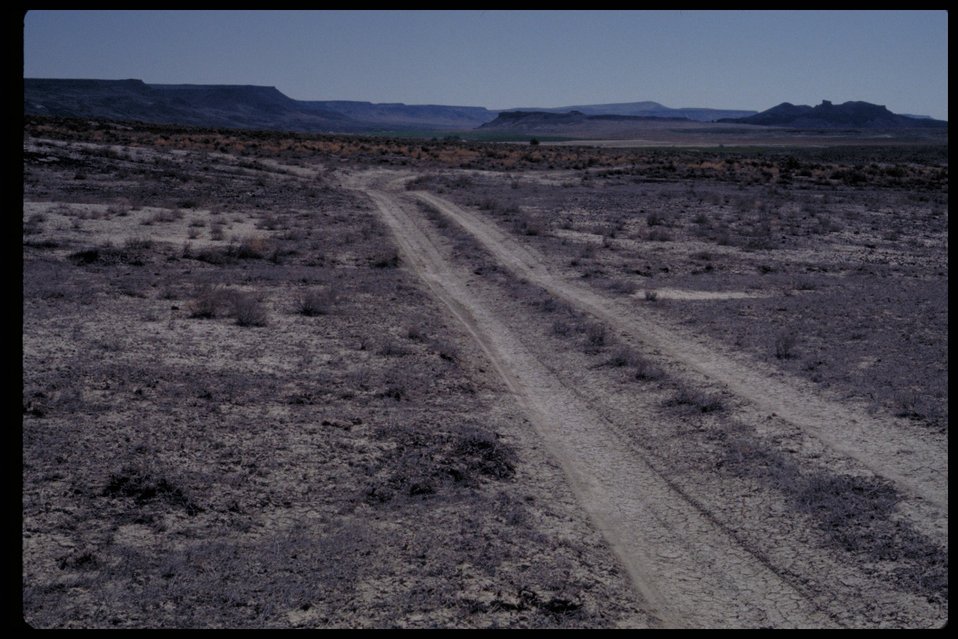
Oregon Trail near Wildhorse Butte Lower Snake River District